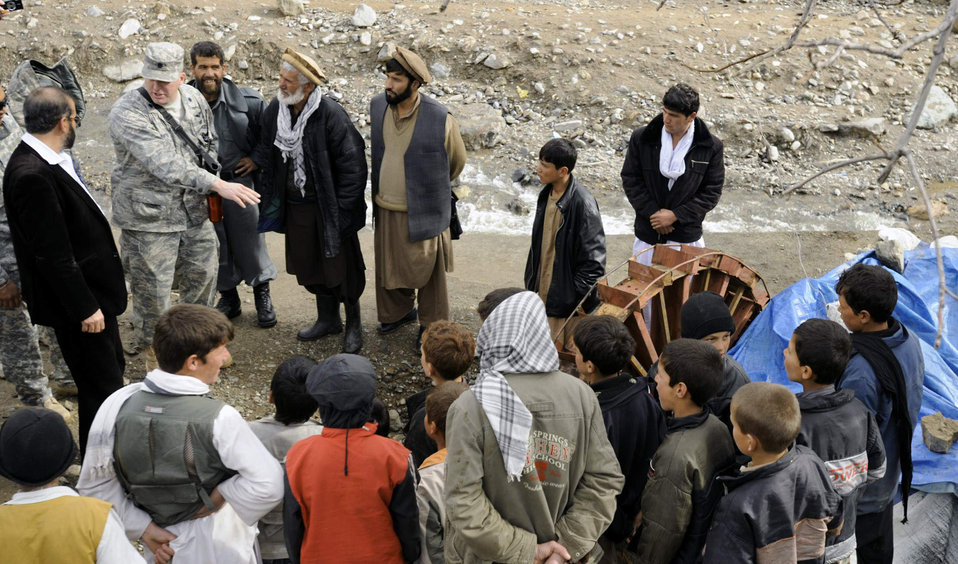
Defense officials identify Air Force casualties

Lt. Col. Mark Stratton talks to villagers about a micro hydro pump provided by the Panjshir Provincial Reconstruction Team in Afghanistan March 4. The micro hydro uses water to create power for the village. Colonel Stratton was killed in action in Afghanistan May 26. Colonel Stratton was the Panjshir PRT commander.